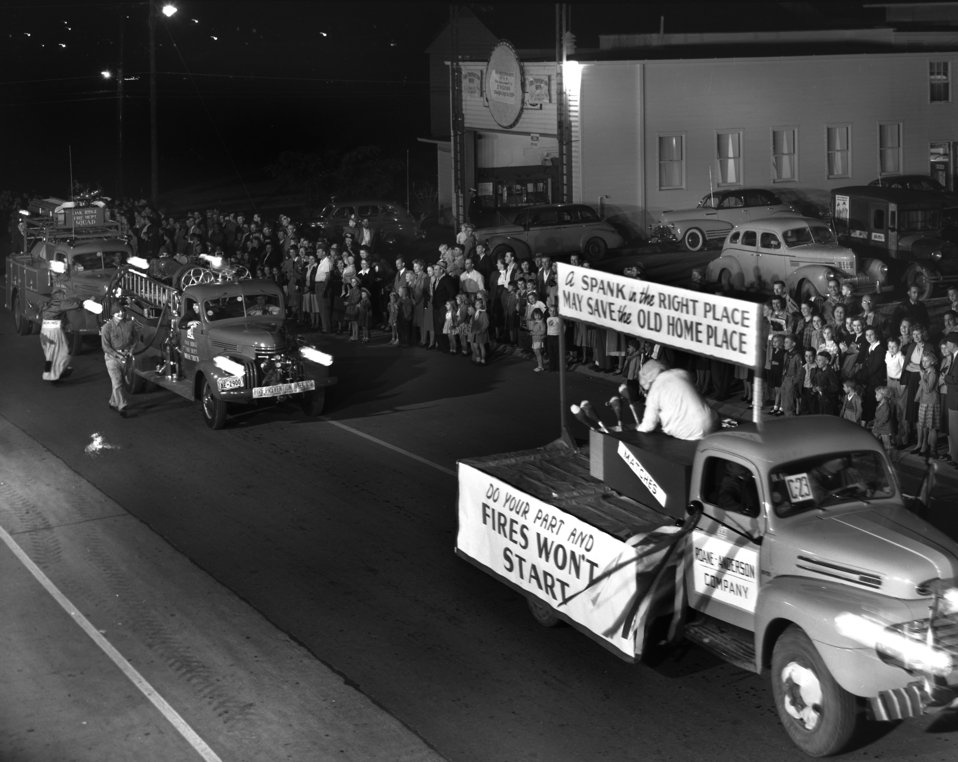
Parade Fire Prevention Week Oak Ridge 1948

5267-7 DOE photo Ed Westcott 10-9-1948 Oak Ridge Tennessee